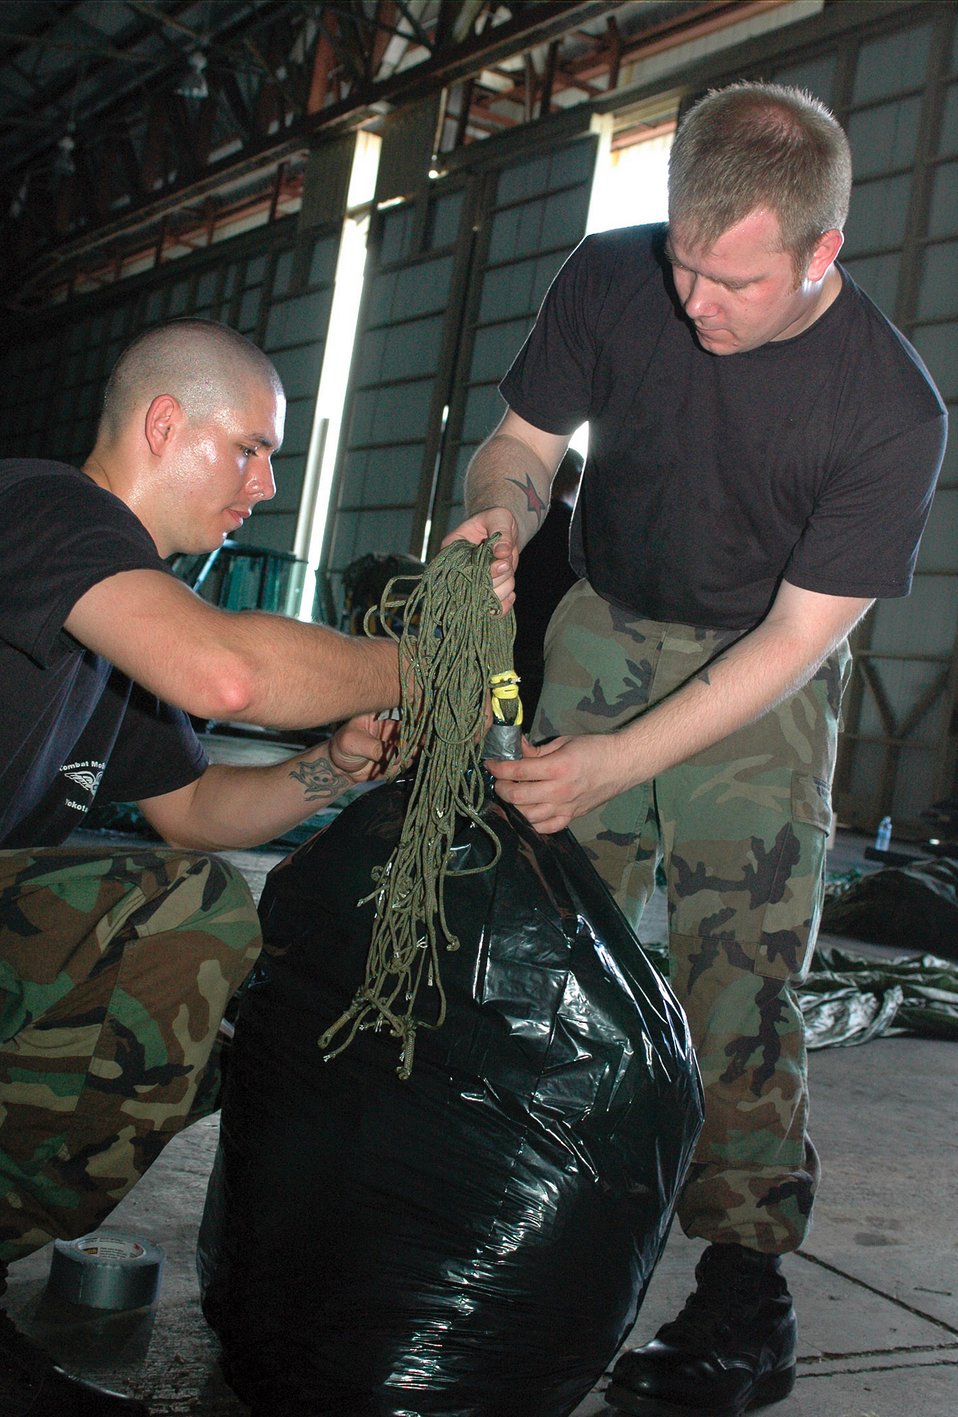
Airmen 'drop' in to help islanders

ANDERSEN AIR FORCE BASE, Guam (AFPN) -- Senior Airmen Ryan Brewer and Eric Hinton pack a parachute used for airdropping donated supplies to Micronesian islanders. The donated food items will be used in this year's Operation Christmas Drop, a 53-year-old tradition. C-130 Hercules aircraft from Yokota Air Base, Japan, loaded up the donated gifts and